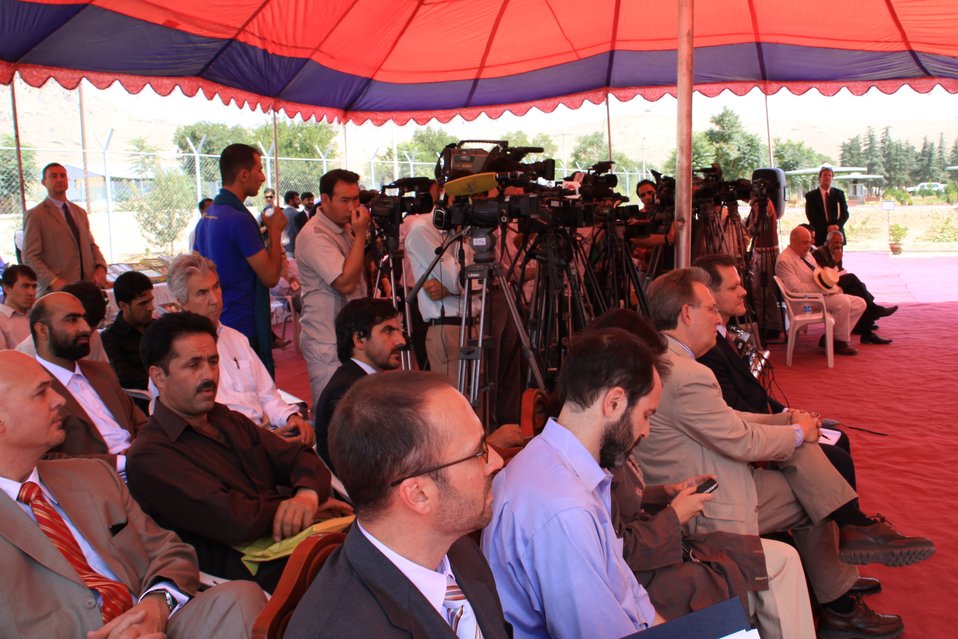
Badam Bagh Farm